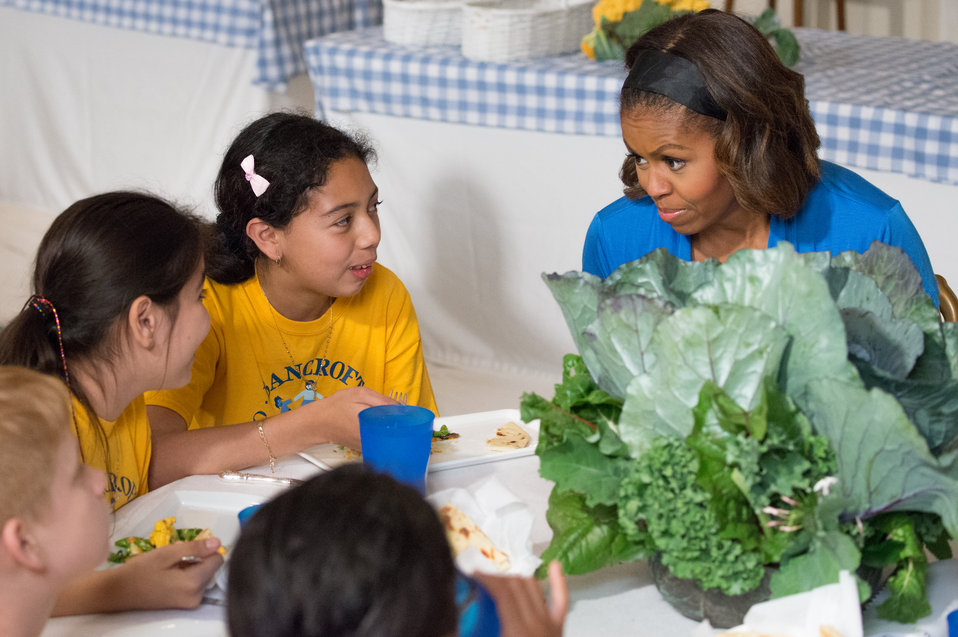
First Lady Michelle Obama (right) tells what some her favorite foods are to Marlene Cedillos (center) and her classmates from Bancroft Elementary while they eat a White House home grown garden salad in the White House State Dining Room, in Washington, D.C. on Thursday, Jun. 12, 2014. Washington, D.C. students from Cleveland Elementary School, Friendship Public Charter School, Kimball Elementary School, Bancroft Elementary School, Harriet Tubman Elementary School, who helped plant the White House Kitchen Garden in the spring, and now enjoys the summer harvest of the crop.